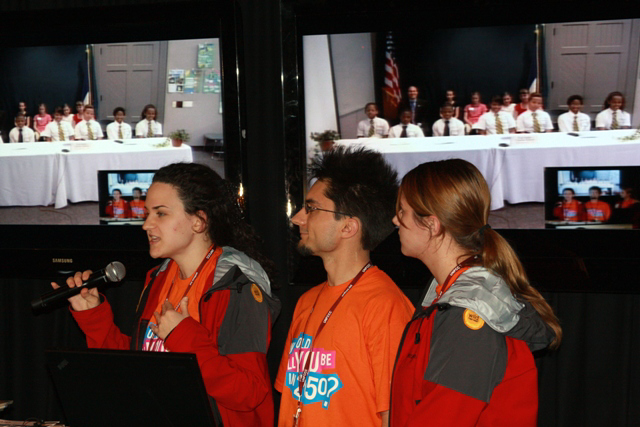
Youth Delegation DVC at COP-15

Members of the youth delegation at COP-15 participate in a DVC with U.S. students in Washington and Virginia sponsored by the U.S. Forest Service during COP15 (Conference of the Parties to the UN Framework Convention on Climate Change) in Copenhagen, Denmark December 10, 2009.